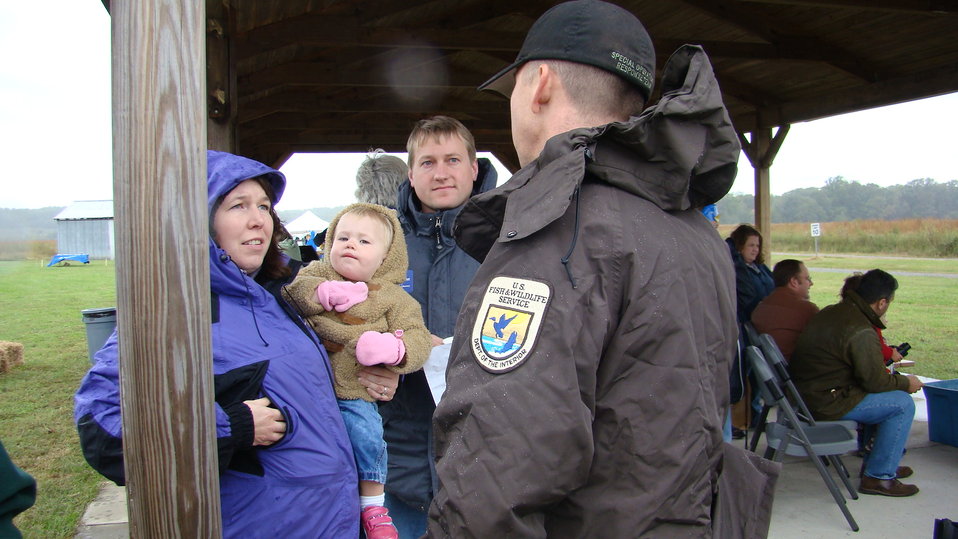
Rappahannock River Valley NWR 15th Anniversary

Refuge staff answer questions about the Refuge and wildlife.